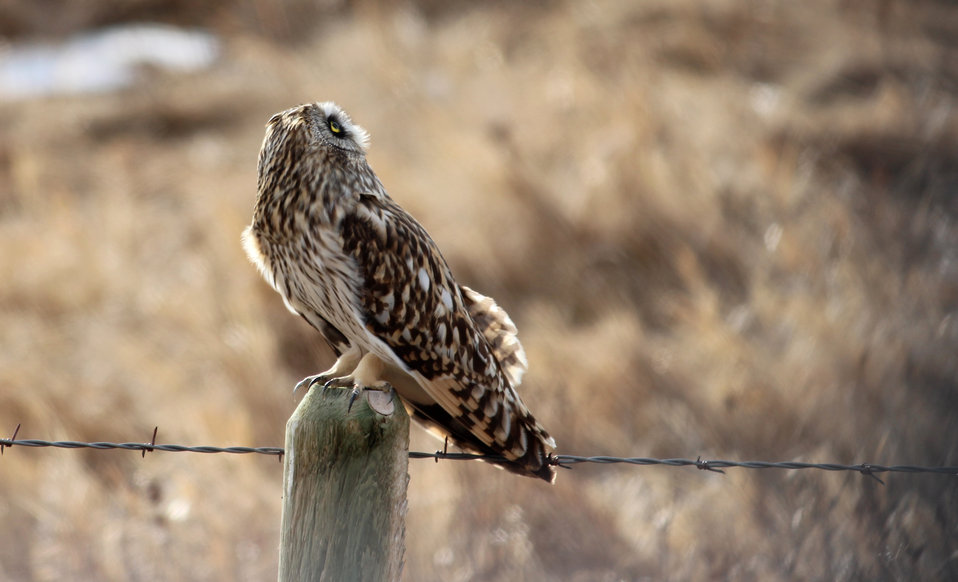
Turning Heads

The Short-eared owl, a partially diurnal owl, can be seen hunting over open fields, meadows, and marshes. This female is perched on a fence in McIntosh County, North Dakota. Surprisingly, this owl nests on the ground in grasslands. Unfortunately, its numbers are in decline due to loss of habitat and grassland conversion.